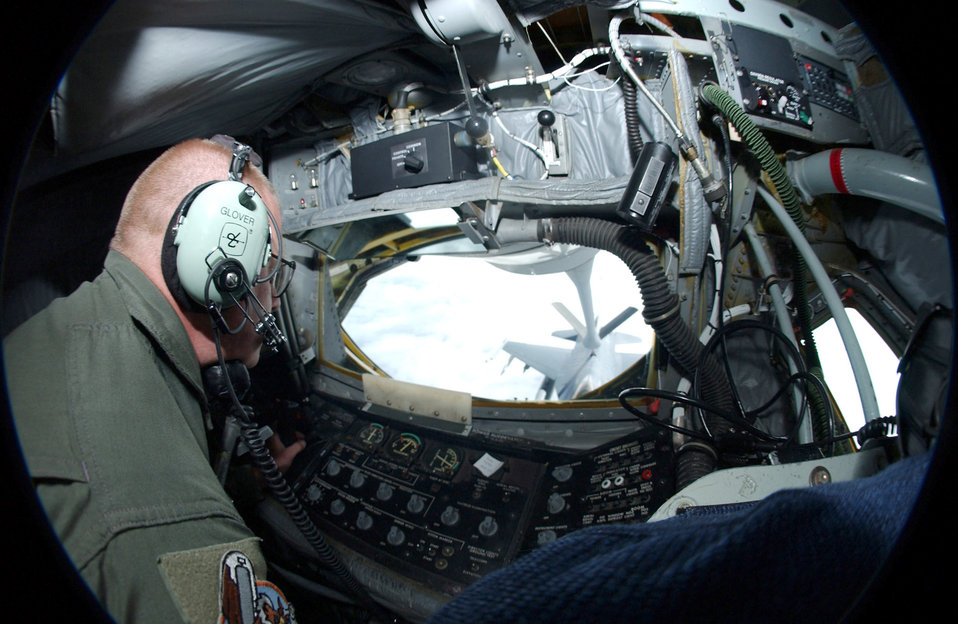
Gas pump in the sky

OVER ALASKA -- Senior Master Sgt. Matt Glover watches as an F-16 Fighting Falcon pilot receives fuel from the boom pod of his KC-135 Stratotanker on June 11 during Northern Edge '04. The exercise is Alaska Command's joint training exercise designed to enhance interoperability among the services. Sergeant Glover is a boom operator with the Air National Guard's 126th Air Refueling Wing at Scott Air Force Base, Ill.